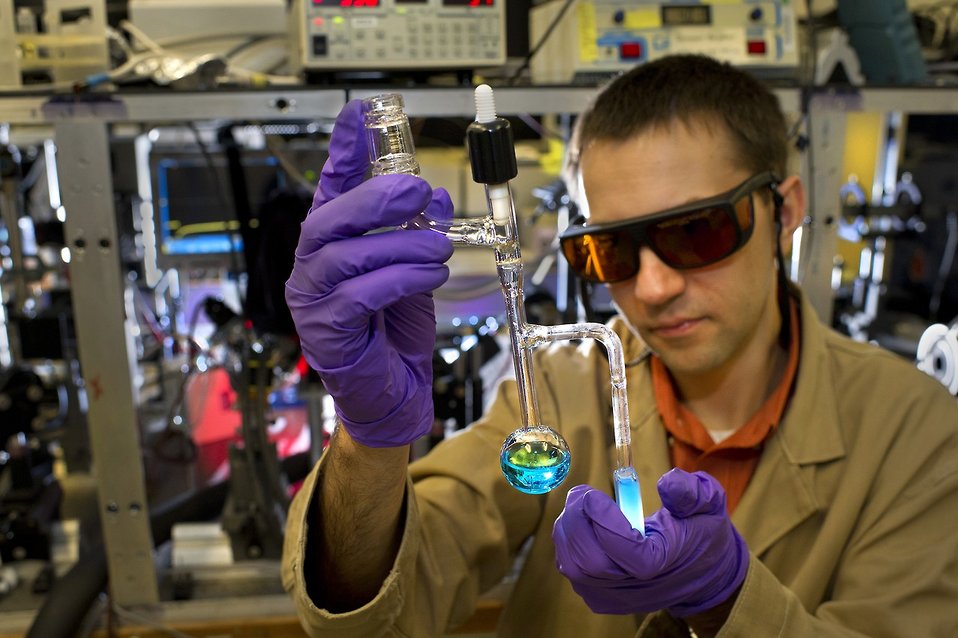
Brookhaven National Laboratory scientist examining a vial containing a specialized catalyst designed to help convert solar energy into fuel.

Producing clean-burning hydrogen fuel from just sunlight and water requires custom-built catalysts for water oxidation-the part of the water-splitting process that generates oxygen atoms. A tiny amount of the solid catalyst, developed in collaboration with the University of Houston, dissolves and turns the water that lovely shade of blue.